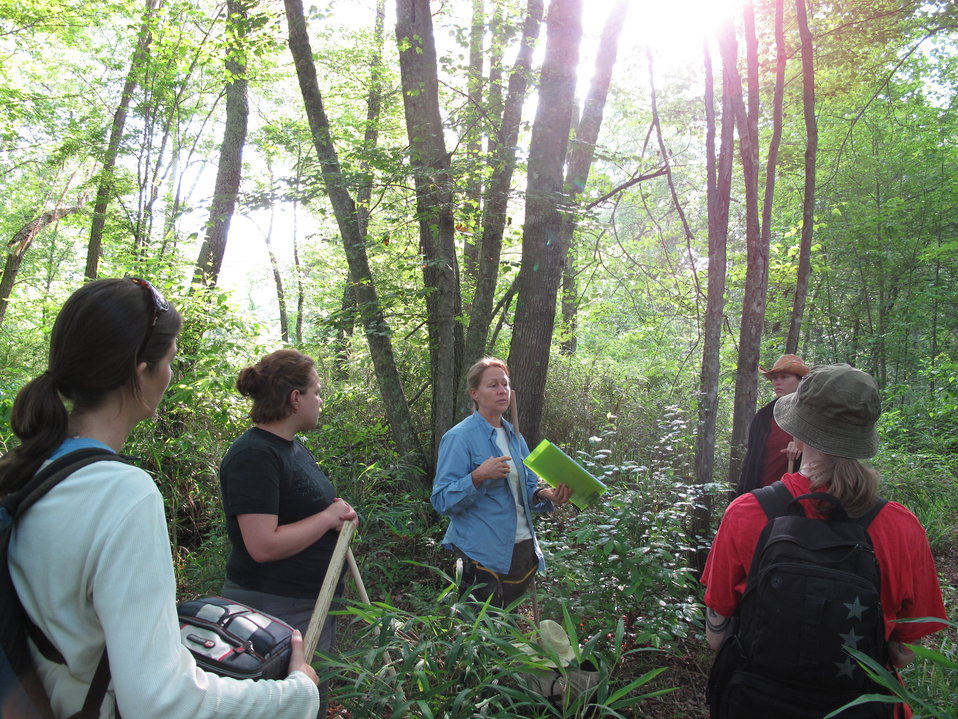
Bog turtle survey team

A group of biologists discuss their efforts to survey bog turtles in this habitat.